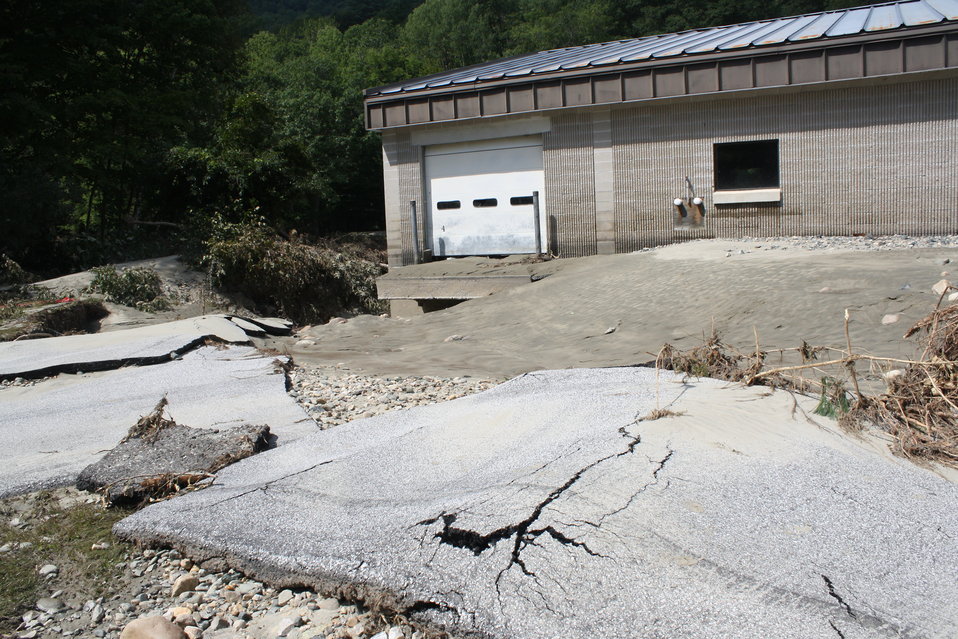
White River National Fish Hatchery facilities and roads were damaged

Quickly rising flood waters and sediment and debris carried by the White River damaged roads, facilities and equipment on White River National Fish Hatchery.